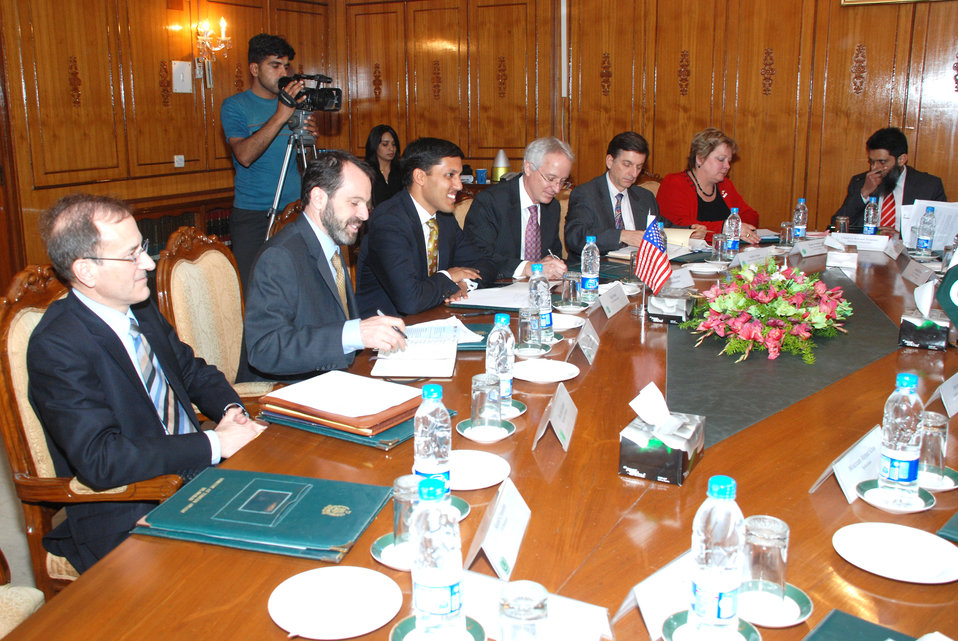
US officials Meeting with Minister of Foreign Affairs, Assistance to Pakistan Remains Strong at Islamabad on April 14, 2012